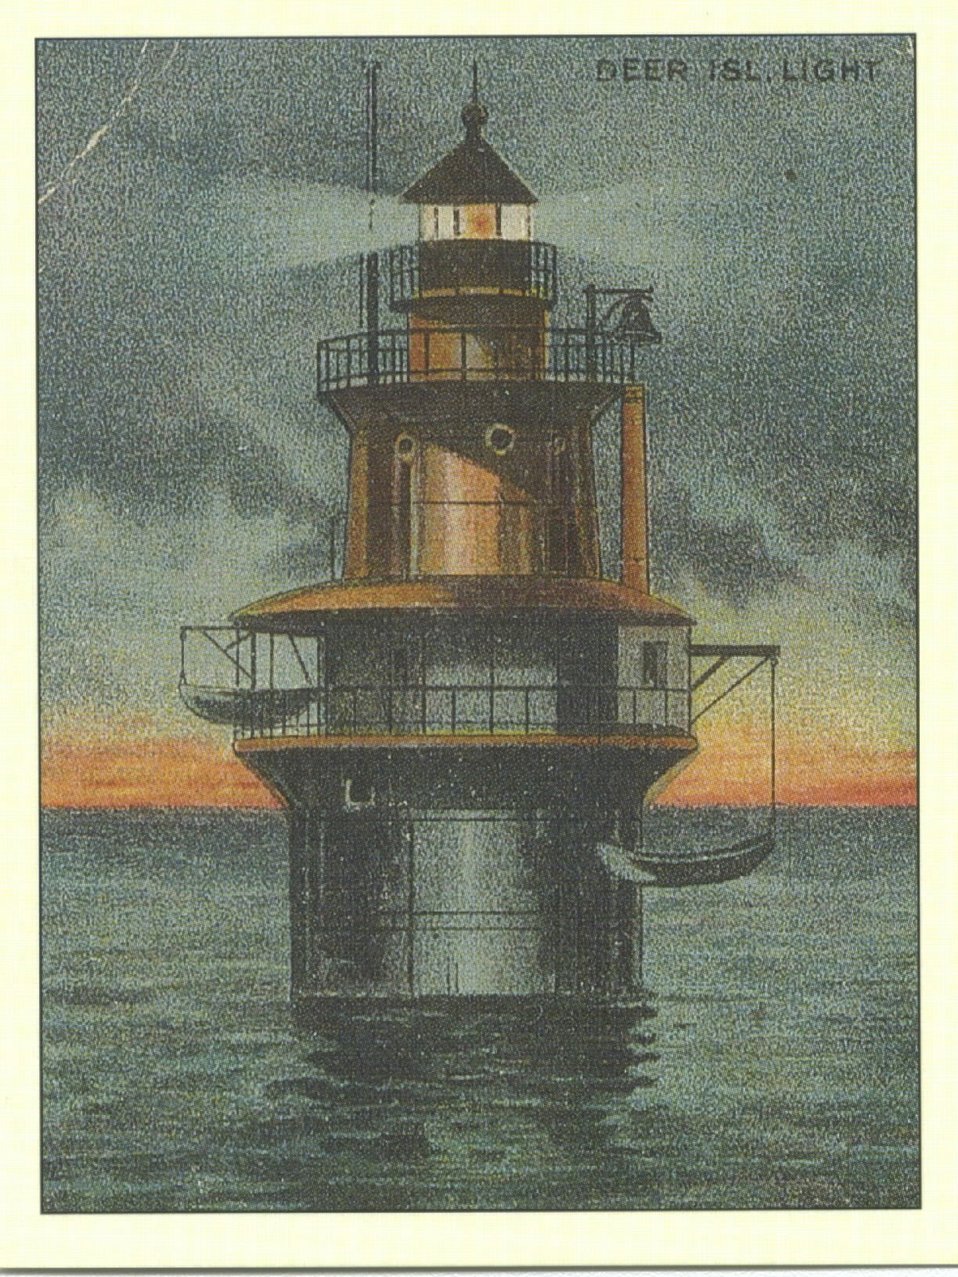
Deer Island Light